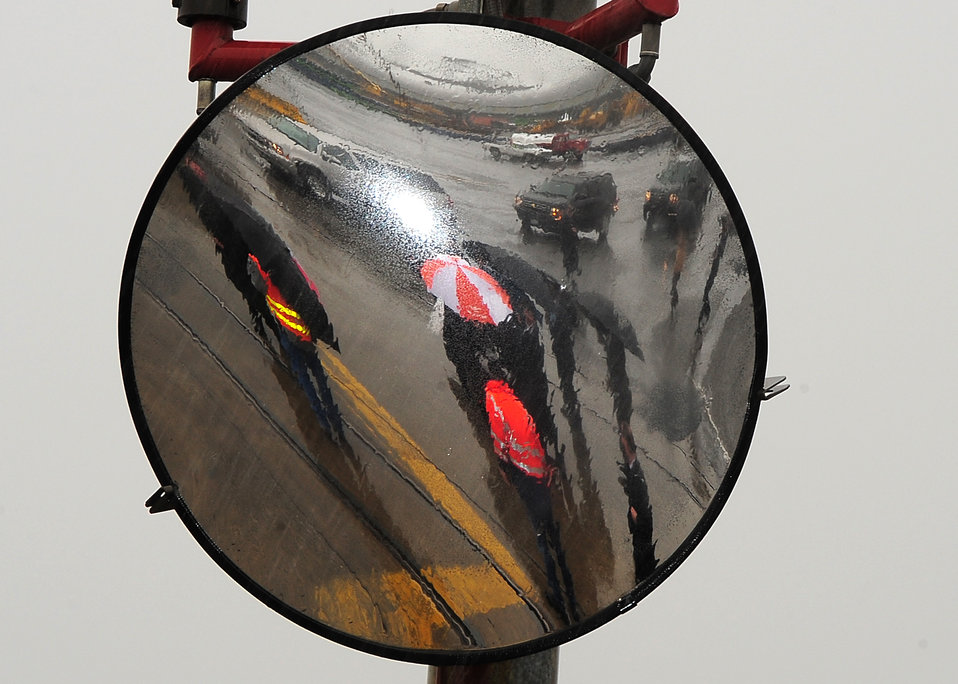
Tacoma, 5/18/2010